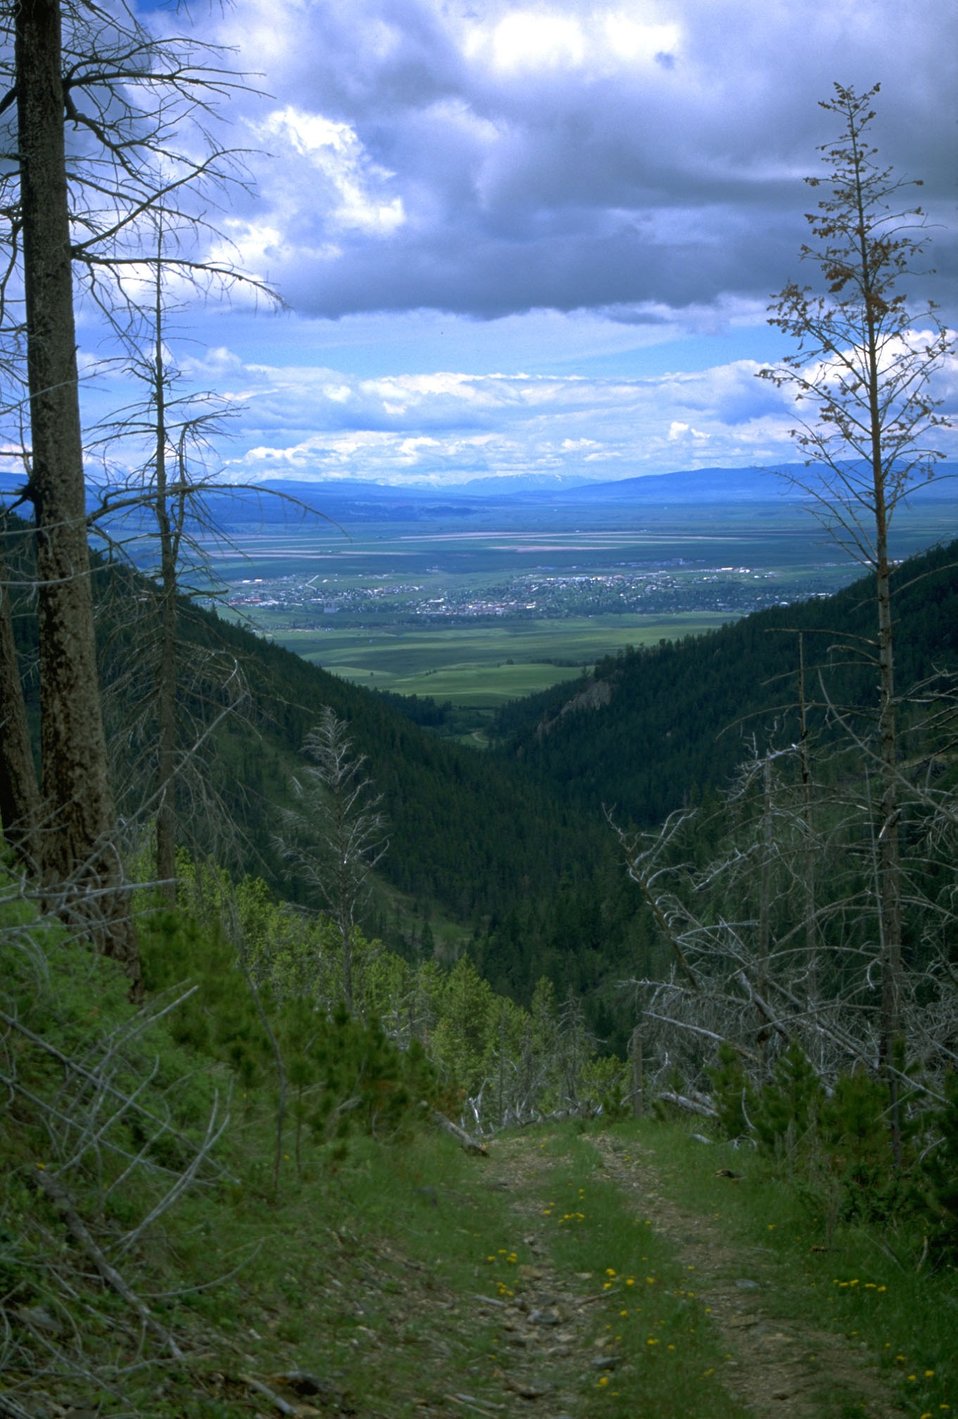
Scenic picture looking down on Lewistown MT